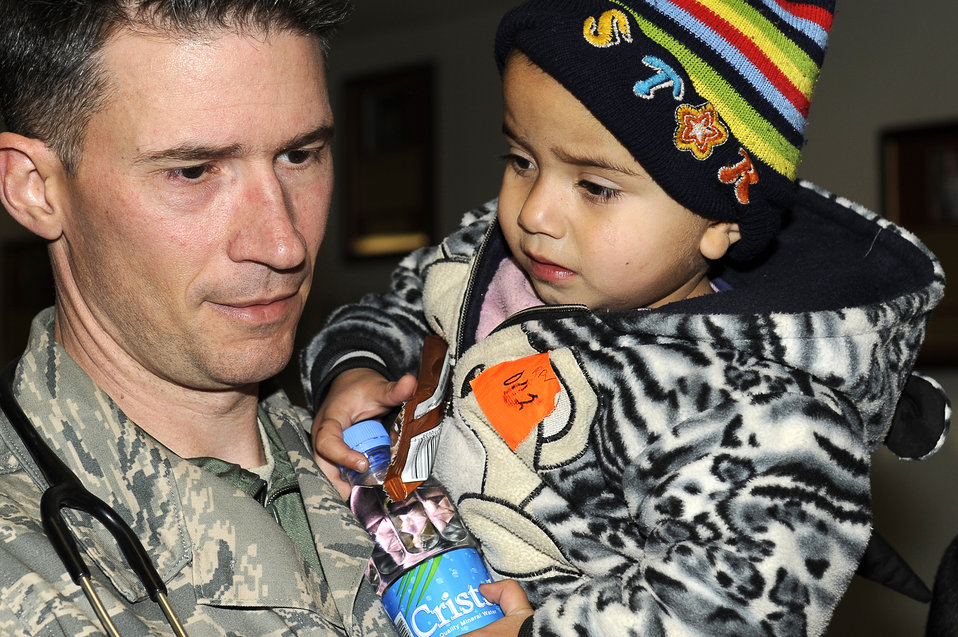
Afghan avalanches

Master Sgt. Jan Fink holds a young avalanche survivor who was medically evacuated Feb. 9, 2010, to Craig Joint Theater Hospital at Bagram Airfield, Afghanistan. Dozens of Afghans were taken to Bagram Airfield after avalanches struck a mountain pass in the Parwan Province. Sergeant Fink is assigned to the 455th Expeditionary Medical Group.